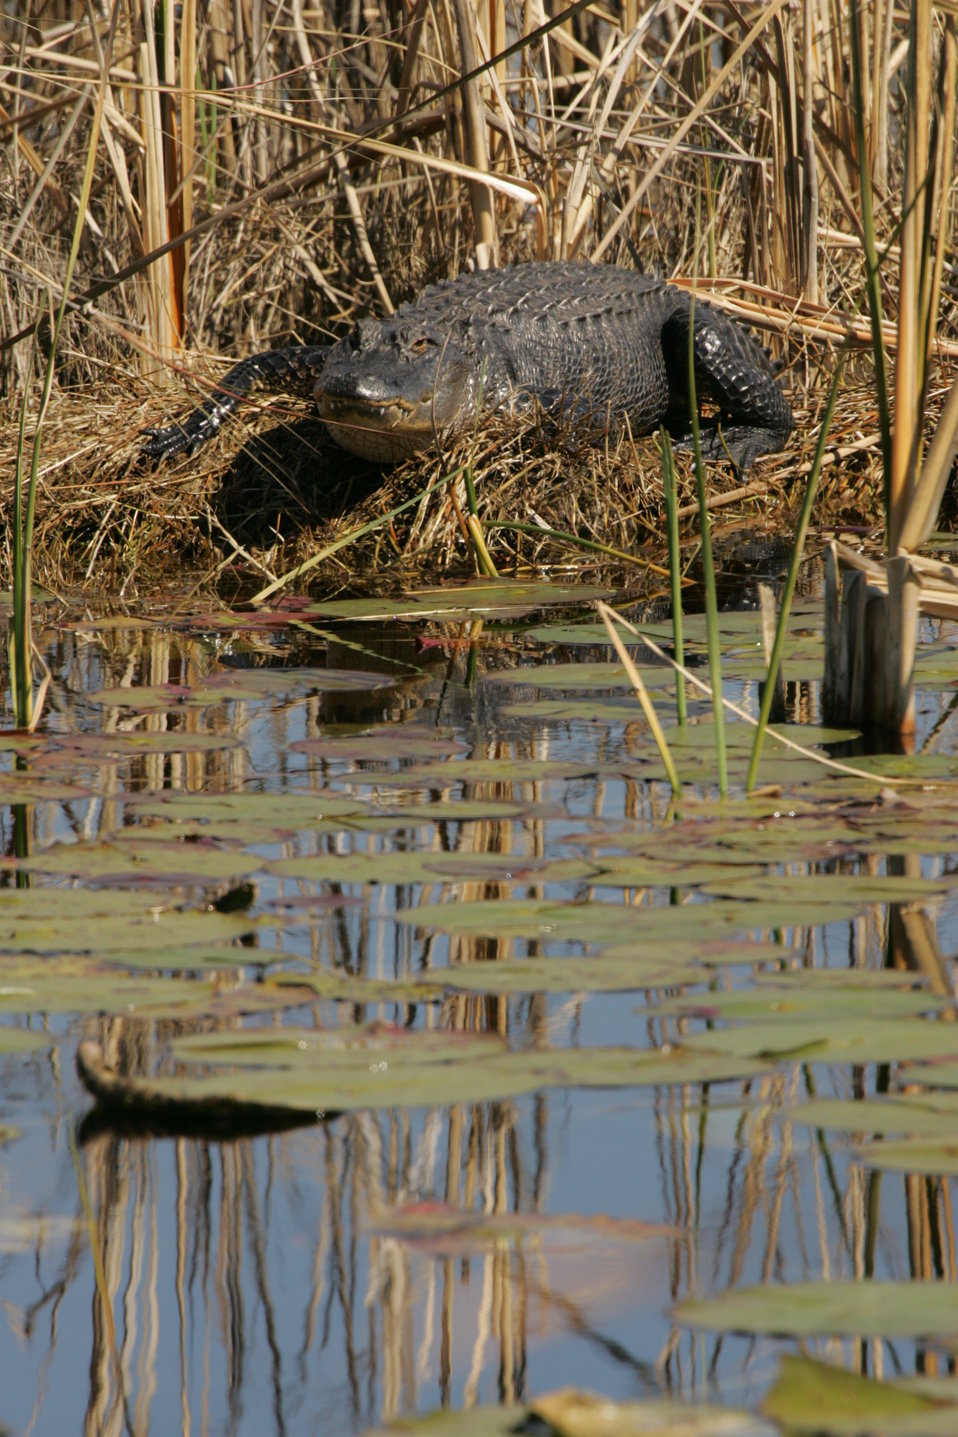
Alligator on the bank of pond at St. Marks National Wildlife Refuge

Large Alligator enjoying the warm sun, contemplating an afternoon dip in the pond.